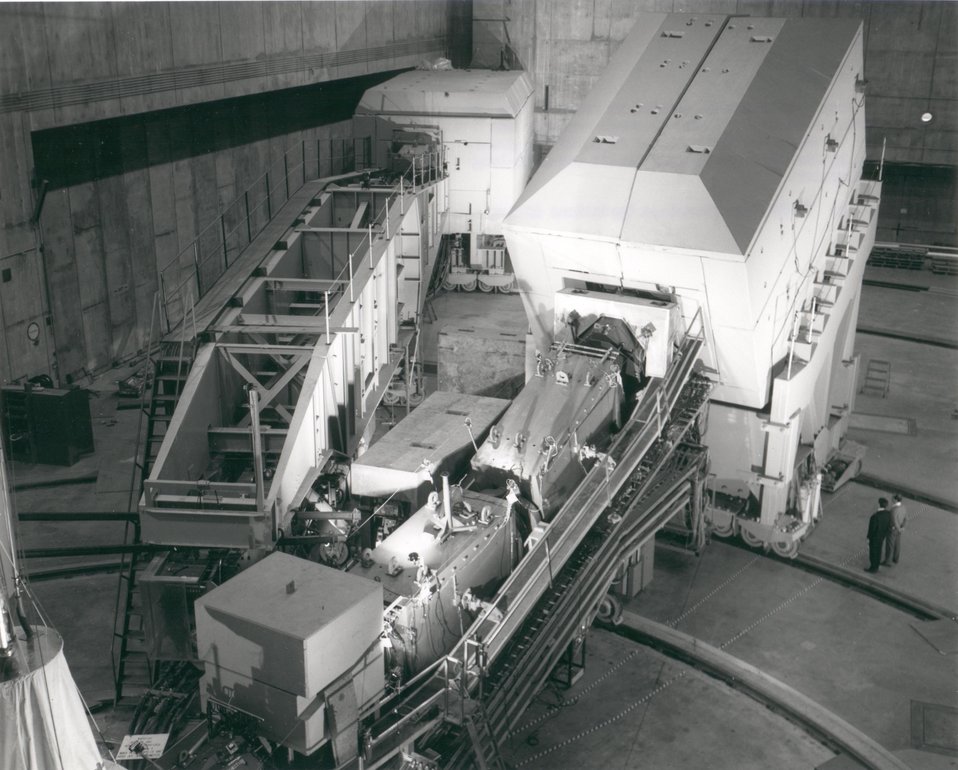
Two huge spectrometers mounted on rails in the End Station A at SLAC. CIrca 1968.